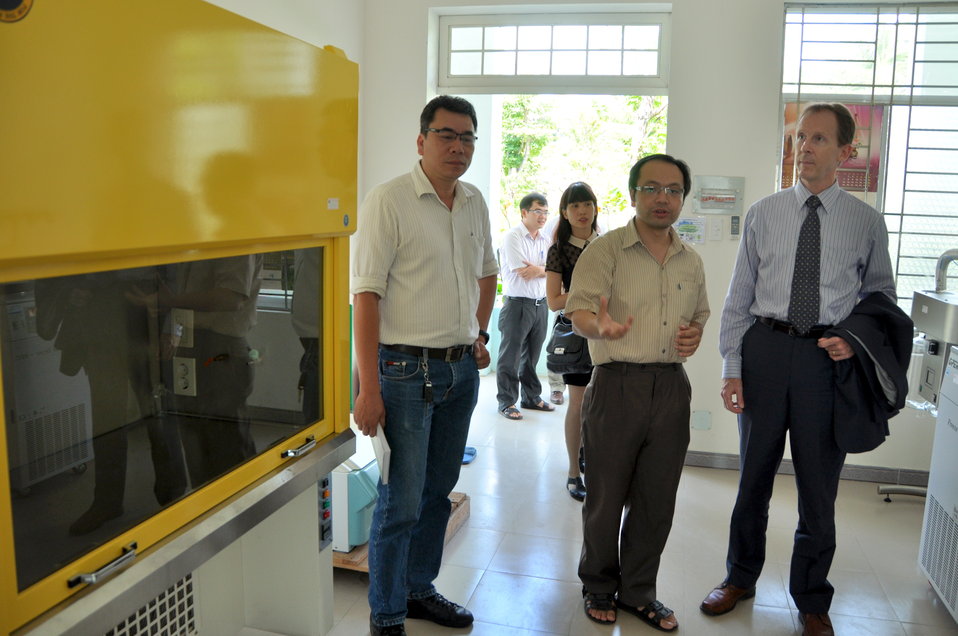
USAID Mission Director visits Danang University of Technology

Danang, July 17, 2013